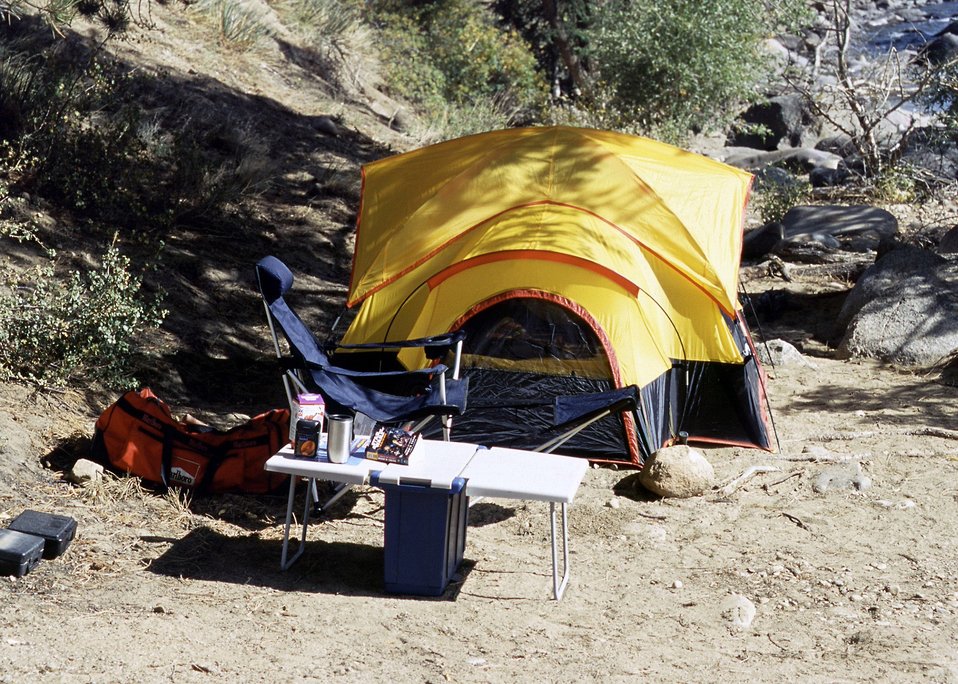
Tent Camping